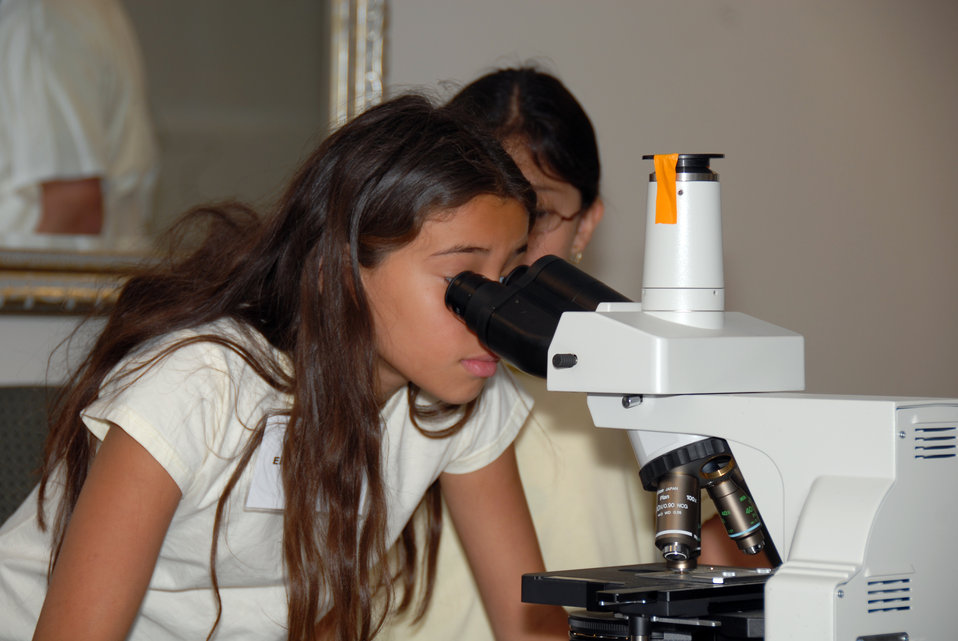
U.S. Department of Agriculture's (USDA) Food Safety and Inspection Service (FSIS) annually hosts a food safety camp that provides children with hands-on instruction about the dangers of foodborne illness and how to prevent it. This Food Safety camp was held at the USDA Beltsville, Maryland facility on May 23, 2007. Activities ranged from hand washing demonstrations with glow-in-the-dark materials to allowing children to study bacteria that can contaminate foods through a high-powered microscope.